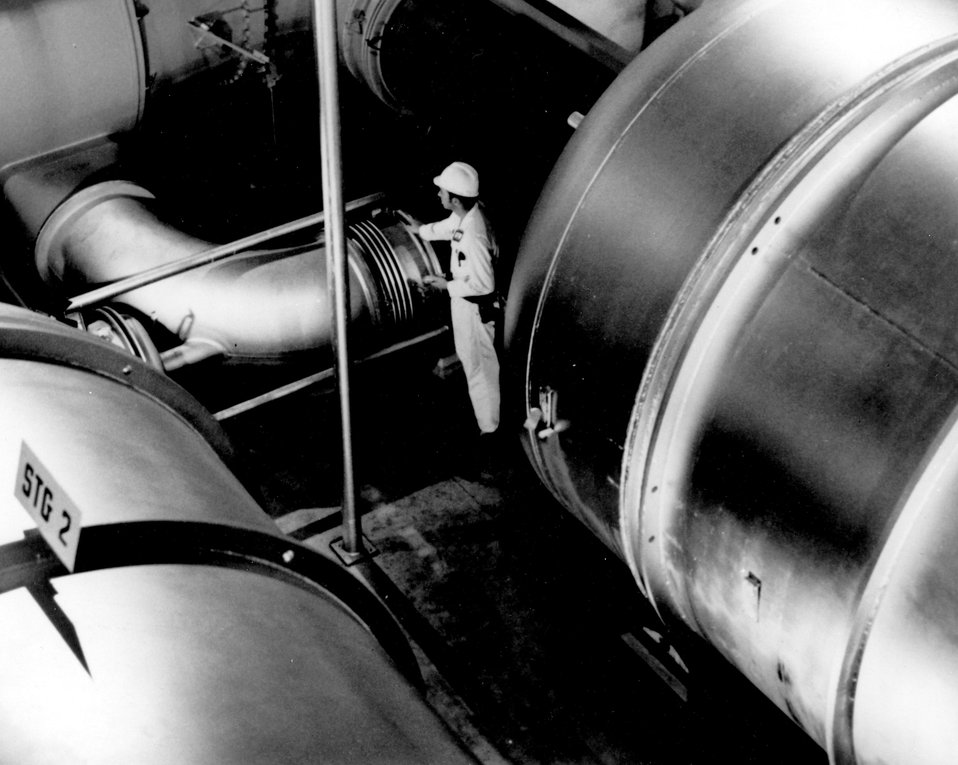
The gaseous diffusion process, which enriches uranium for use in atomic energy activities, is done at Energy Research and Development Administration-owned, contractor-operator plants in Kentucky, Ohio, and Tennessee. In the process, gaseous uranium hexaflouride (UF6) is put through a series of barriers, which partially separate the highly fissionable, lighter and faster-moving uranium-235 atoms from the heavier and slower-moving uranium-238 atoms that make up the bulk of the material. Circa 1971.